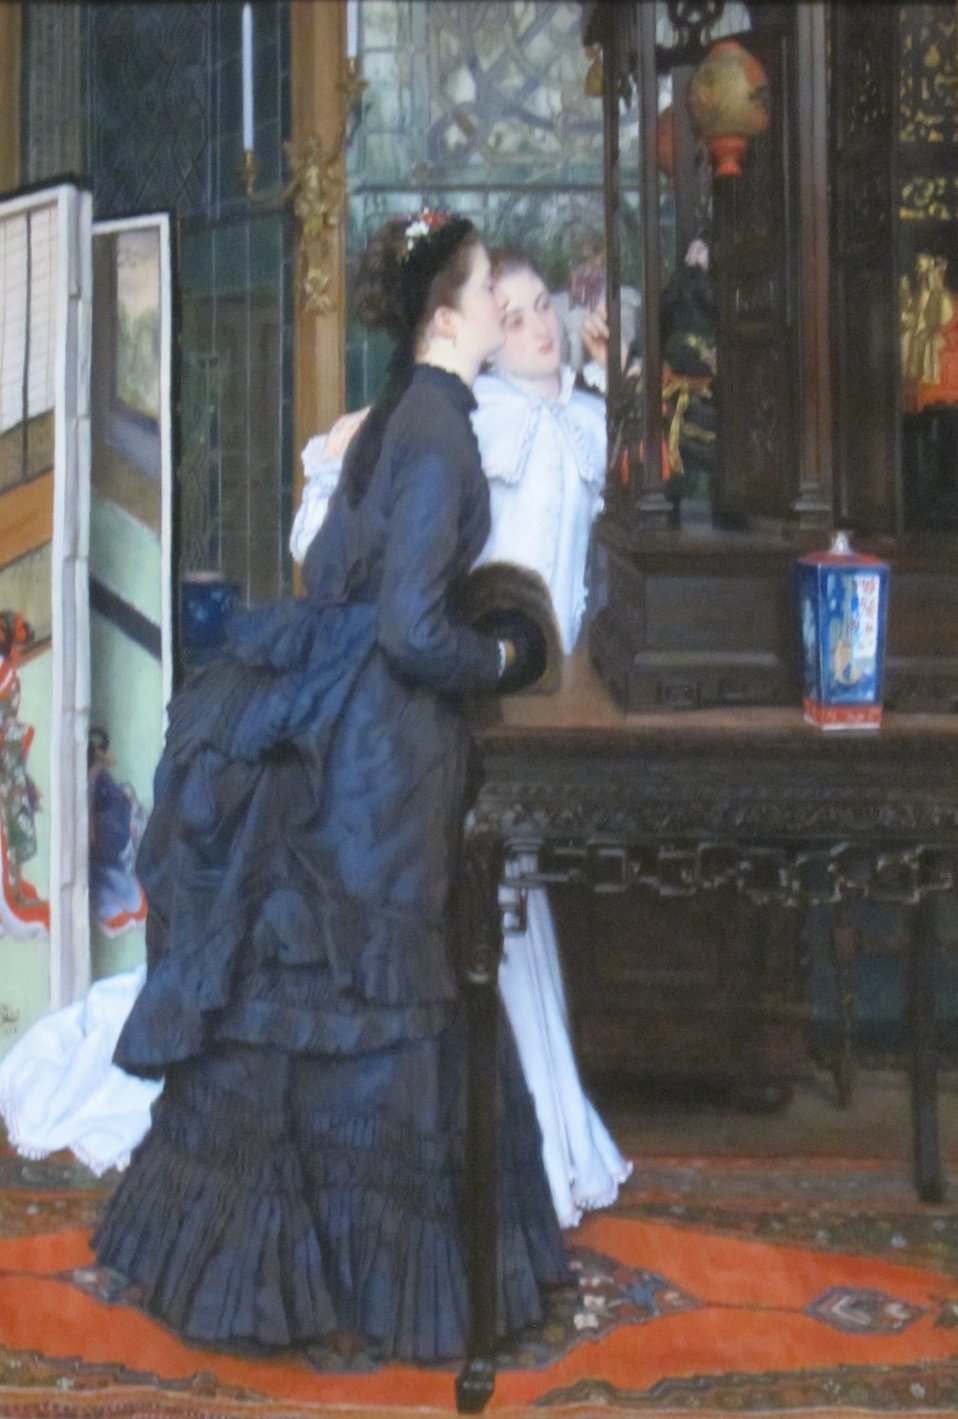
'Young Ladies Admiring Japanese Objects' by James Tissot